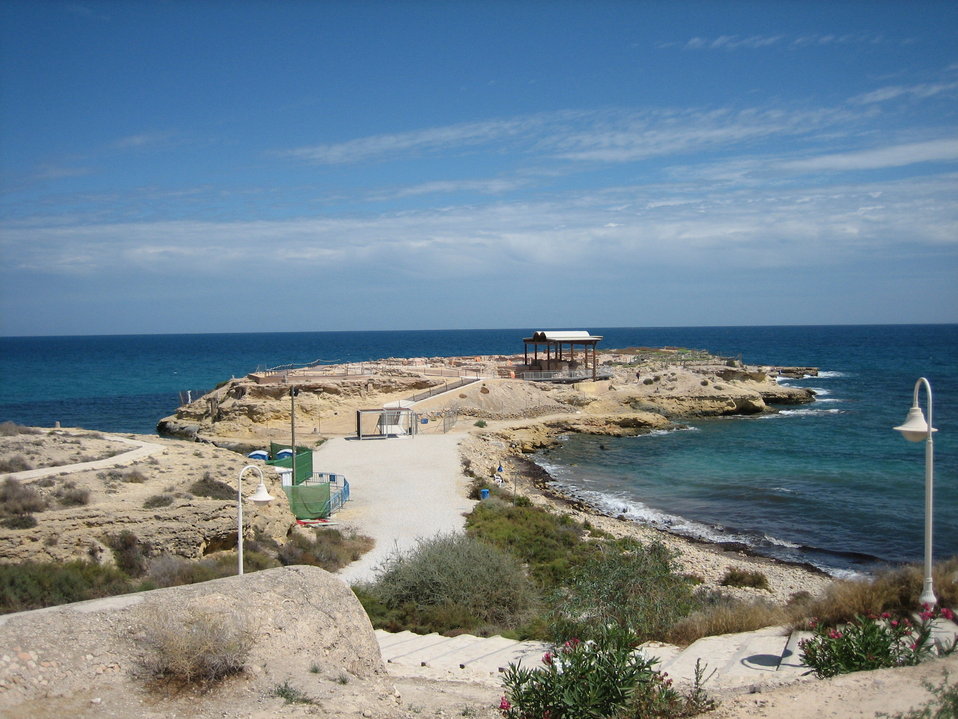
La Isleta (Campello)